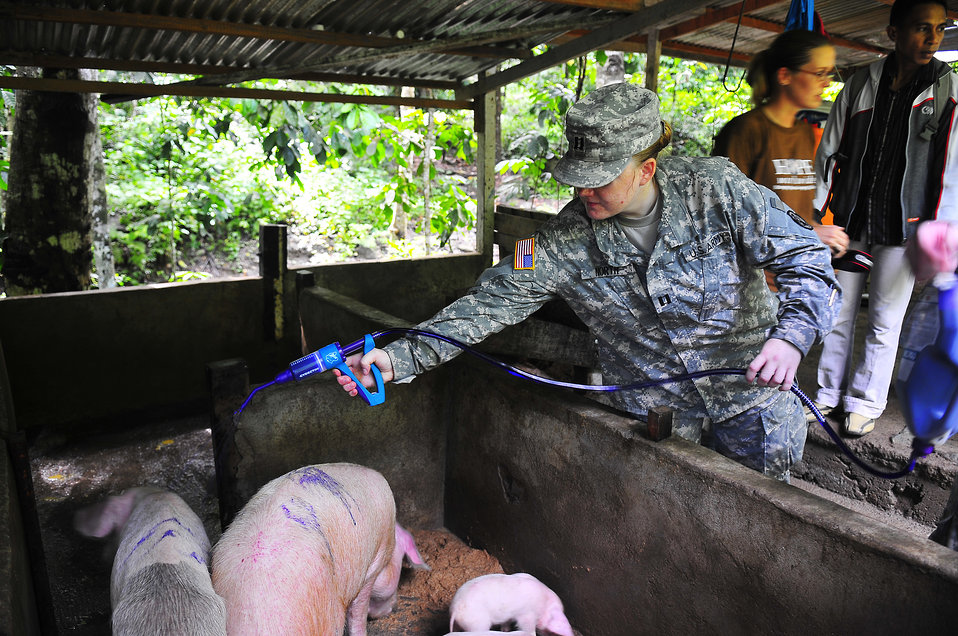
Capt. North Applies De-worming Medicine Onto the Backs of Pigs

Capt. Jolene North, Pacific Partnership 2010 veterinarian officer-in-charge, applies de-worming medicine onto the backs of pigs during a Pacific Partnership 2010 veterinary civic action program held at the Amahusu village on July 29, 2010. The Military Sealift Command hospital ship USNS Mercy (T-AH 19) is in Ambon, Indonesia, participating in Sail Banda 2010. Mercy’s participation features medical and dental care clinics and construction projects in and around Ambon, as well as on Seram Island.